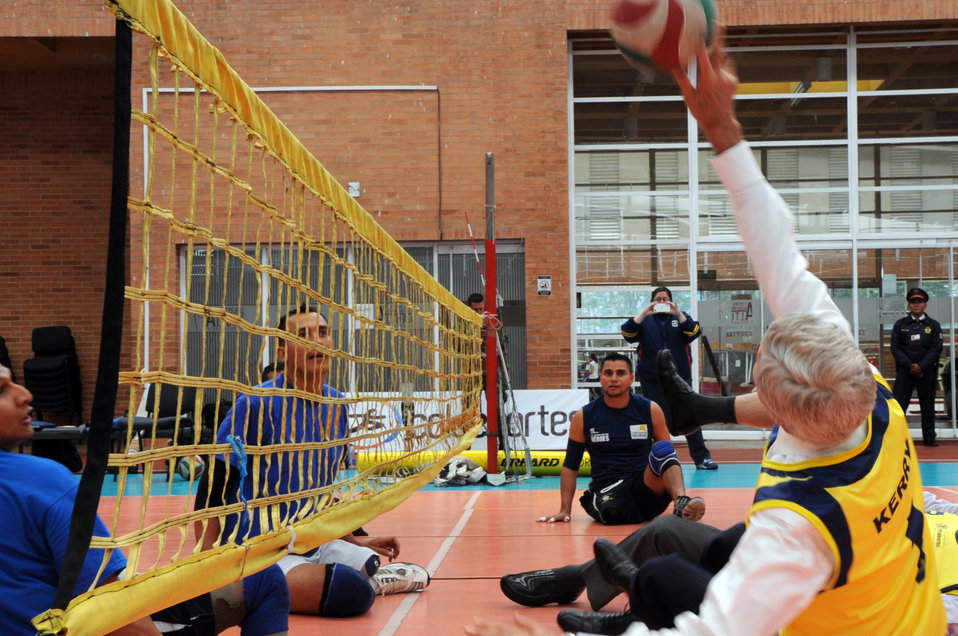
Secretary Kerry Plays Seated Volleyball With Wounded Veterans

U.S. Secretary of State John Kerry takes a shot while participating in a seated volleyball game with wounded veterans during a visit to the Coldeportes Center in Bogota, Colombia, on August 12, 2013.